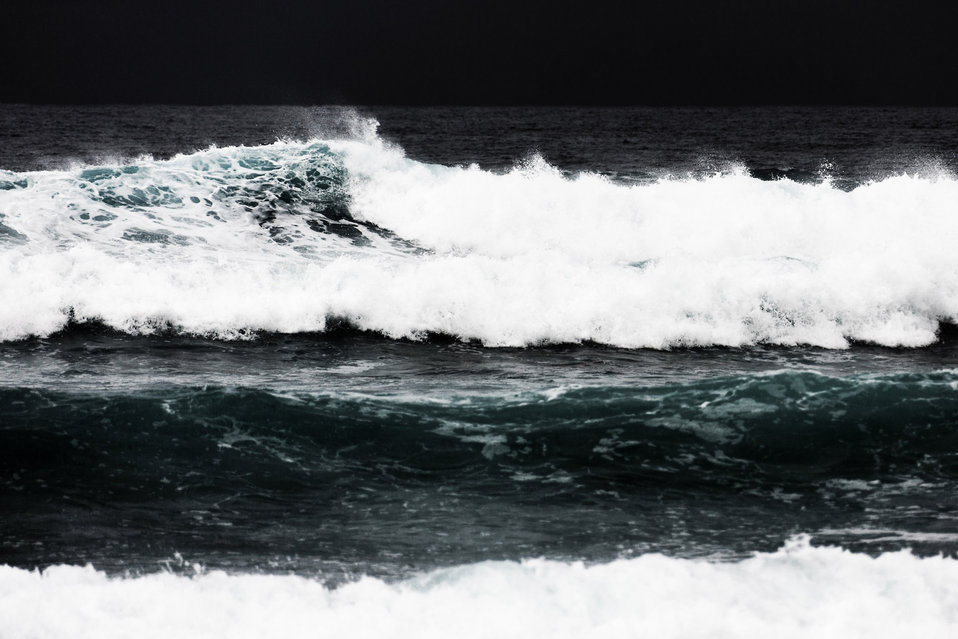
Rough waves in dramatic weather.